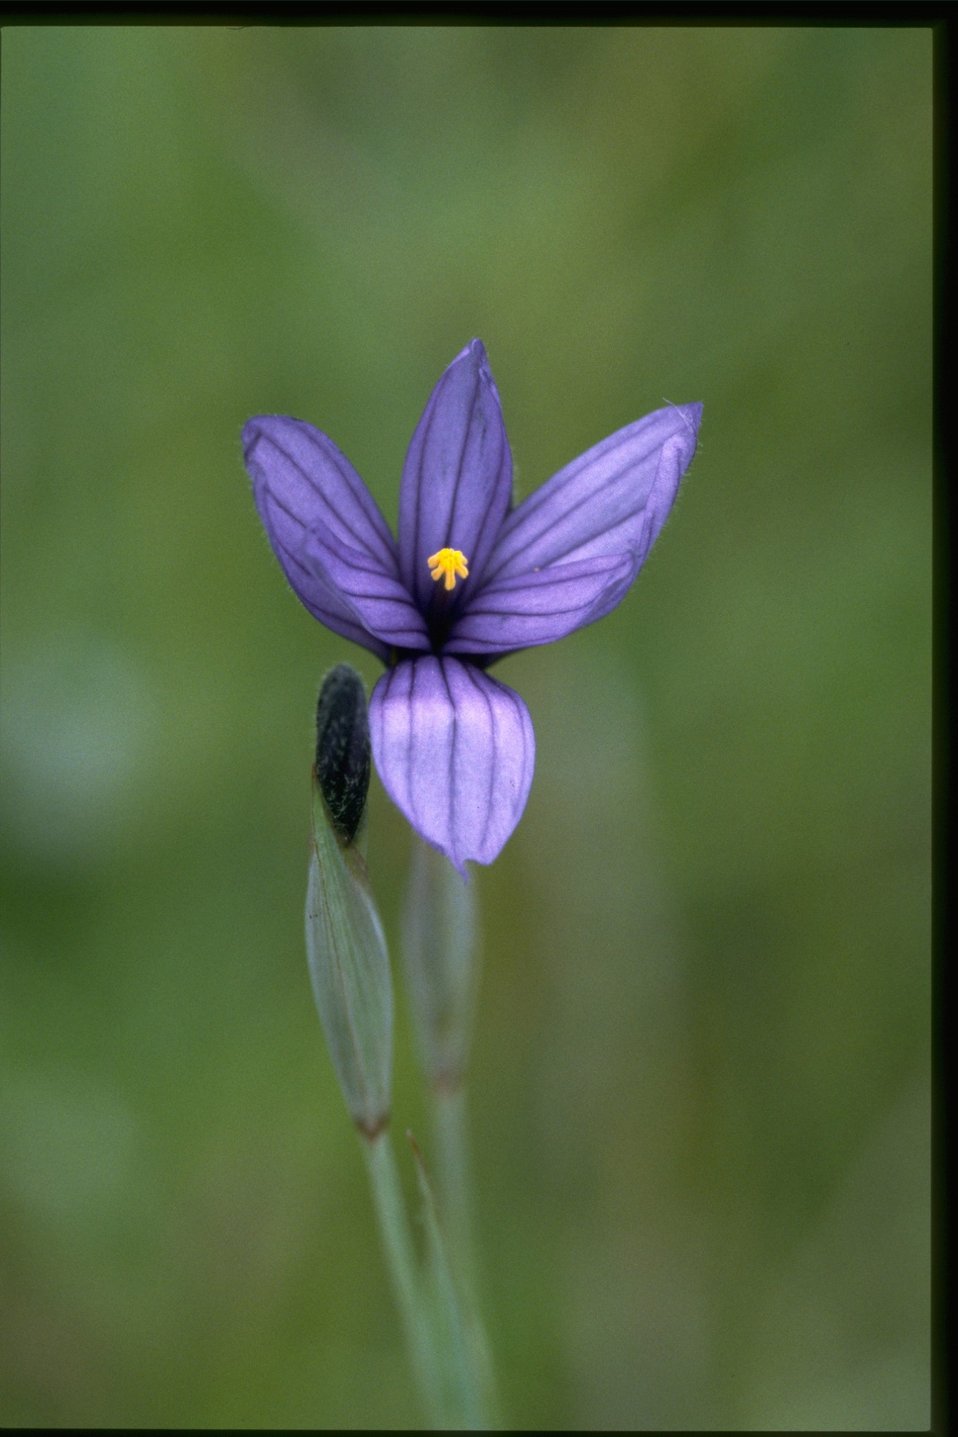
Closeup shot of Sisyrinchium idahoense.